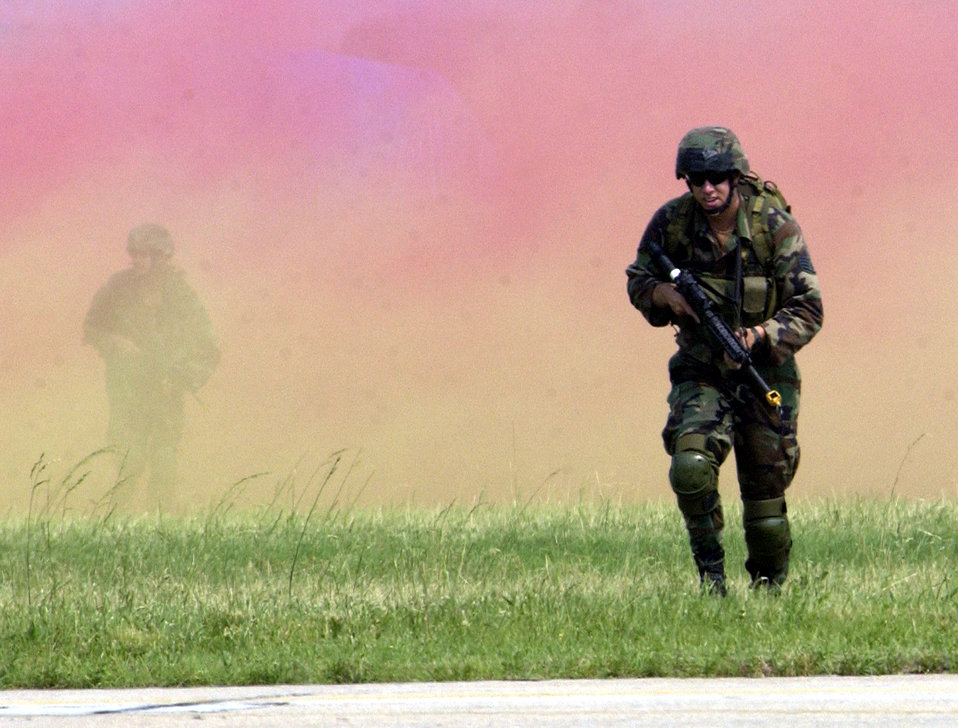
The show goes on

LANGLEY AIR FORCE BASE, Va. -- Security forces members demonstrate securing an airfield during a display of superior air power at the Air Power over Hampton Roads Air Show here May 23. The security forces members are from the 820th Contingency Response Group at Moody Air Force Base, Ga.